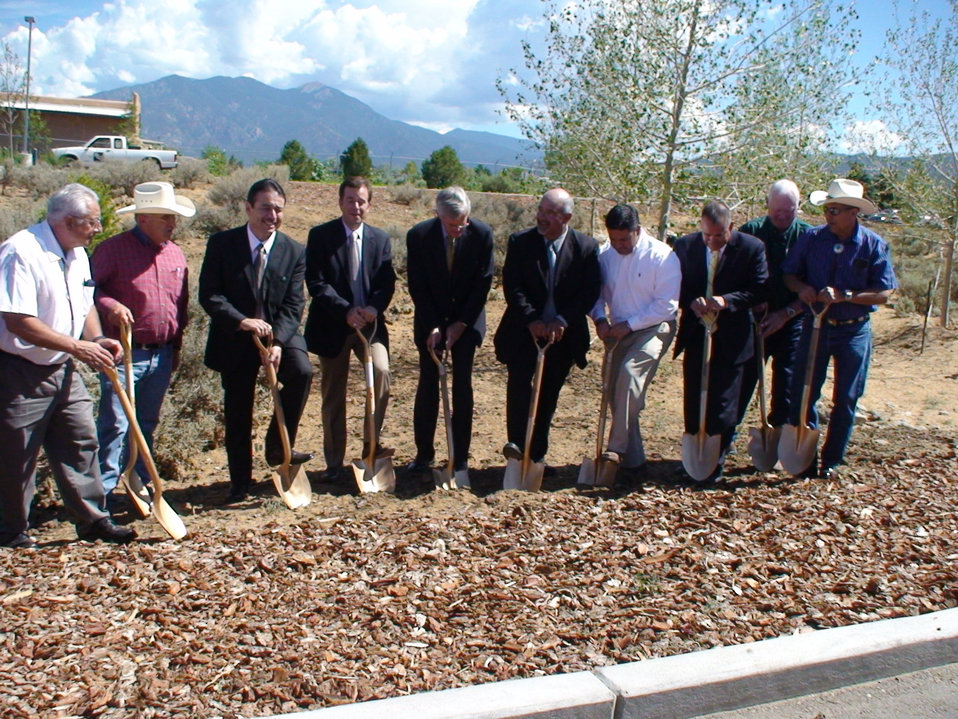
Funding from the American Recovery and Reinvestment Act (ARRA) enabled the Kit Carson Electric Co-op (KCEC) launch its $64 million broadband fiber-to-the-home project with a groundbreaking ceremony on Friday, Aug. 17, 2011 in Taos, NM. KCEC’s project to build an emergency command and communications center for the region is now complete and the two projects are linked since the command center will act as project headquarters for the broadband build-out. The rural broadband project will extend 100 mbps service at very affordable rates to over 20,000 rural residents of Taos, Colfax and Rio Arriba counties in NM. The funds are 70 percent ARRA dollars and 30 percent from the Co-op. In addition to economic development, educational, public safety and healthcare applications, the broadband project will also enable ‘smart grid’ and ‘green grid’ applications with increased opportunities for new
jobs. (L to R) NM State Representative Roberto Bobby J. Gonzales, Kit Carson Electric Co-op (KCEC) Trustee Virgil Martinez, Taos, NM, Mayor Darren Cordova, Terry Bruner, U.S. Senator Jeff Bingaman, KCEC President Bobby Ortega, U.S. Congressman Ben R. Luján, KCEC CEO Luis Reyes, KCEC Trustee Jerry Smith, and KCEC Trustee Francis Cordova.